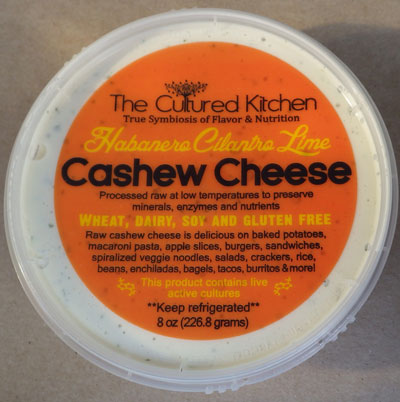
RECALLED – Non-dairy cashew cheese products

ecember 31, 2013 – The Cultured Kitchen® Voluntarily Recalls Cashew Cheese Due To Possible Risk Of Contamination From Salmonella
Photos.